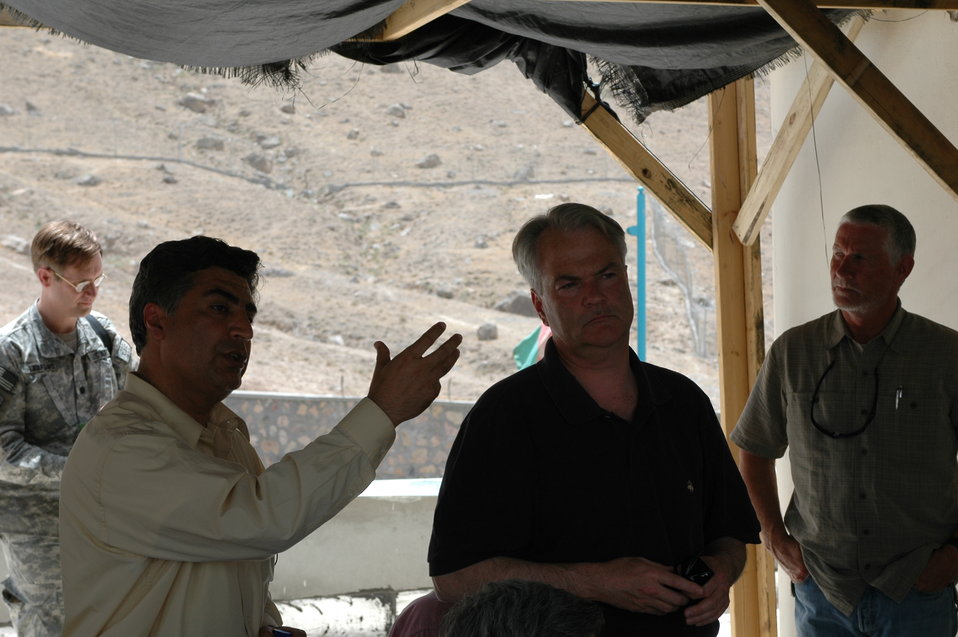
CODEL Berman